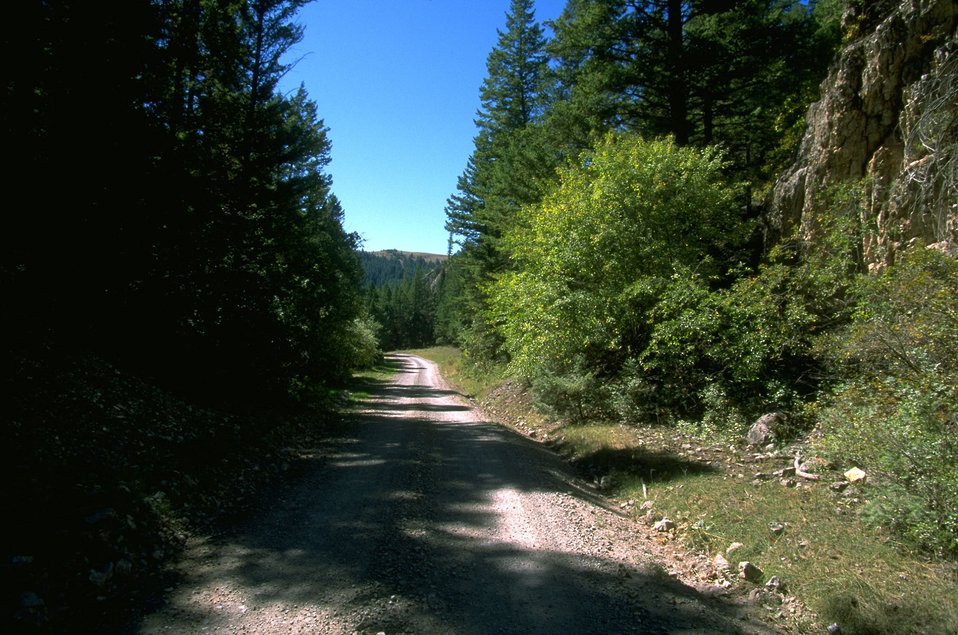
Rattler Gulch-Limestone Cliffs ACEC (area of critical environmental concern) with roadway